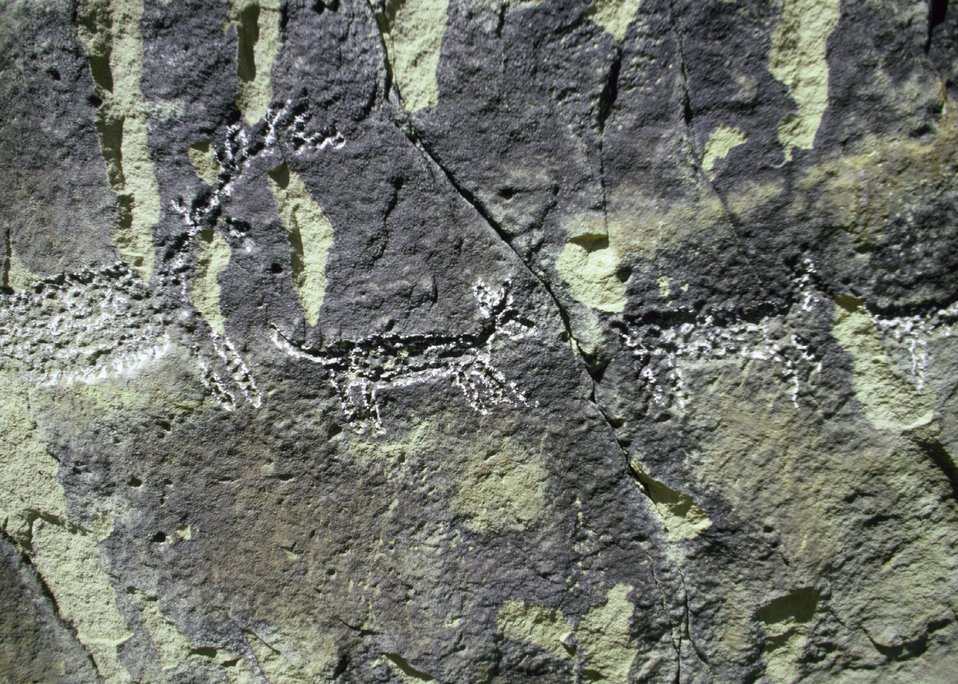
Petroglyphs in Whoop-up Canyon, northeast Wyoming.